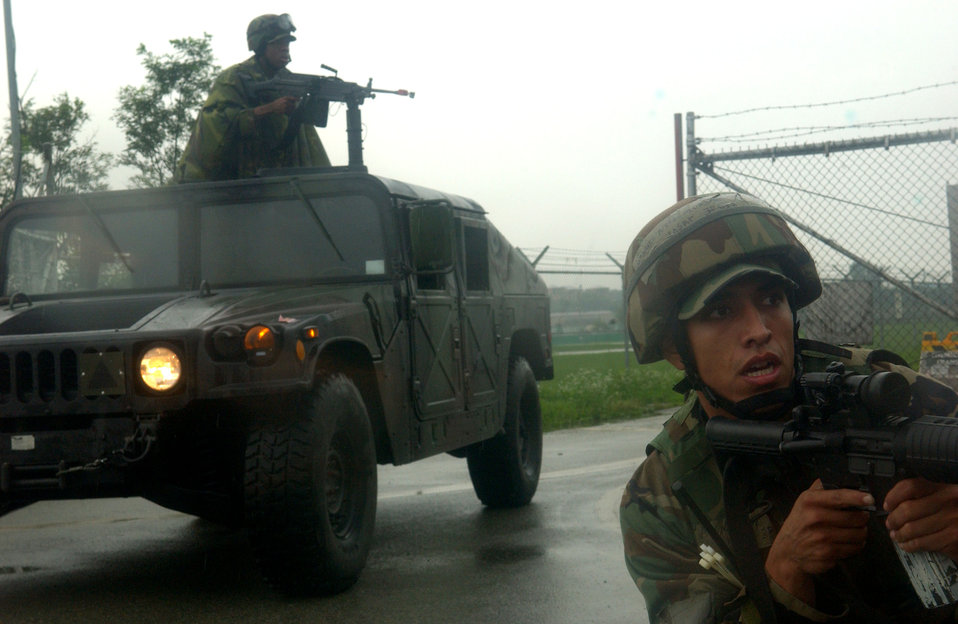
Beverly Bulldog at Osan

Security forces Airmen wait for